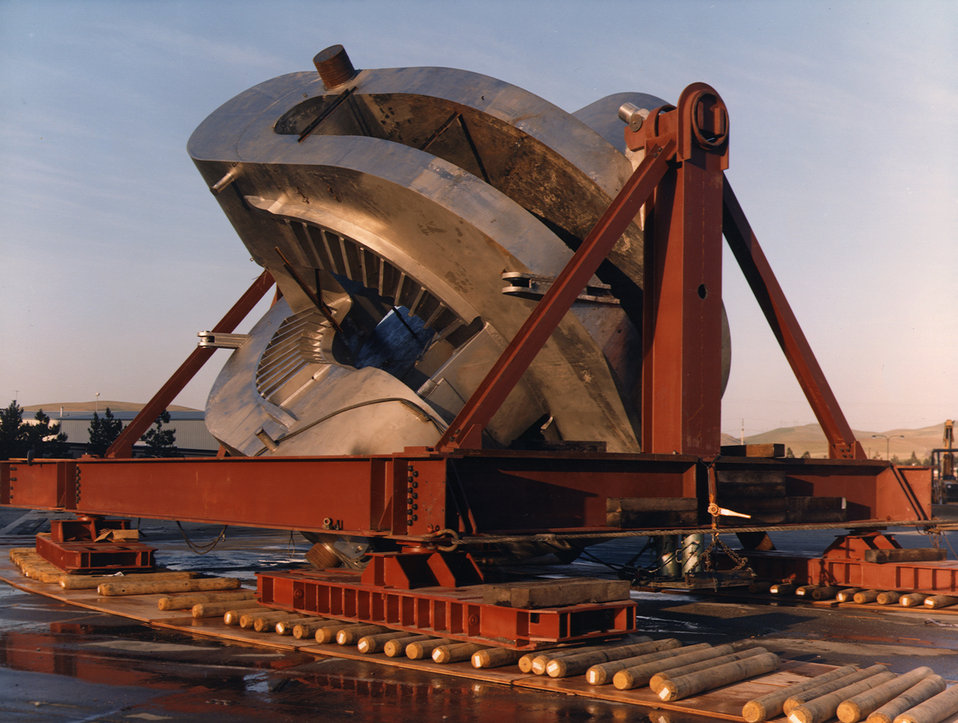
Photo of the Week: The Mirror Fusion Test Facility

This 1981 photo shows the Mirror Fusion Test Facility (MFTF), an experimental magnetic confinement fusion device built using a magnetic mirror at Lawrence Livermore National Laboratory (LLNL). The MFTF functioned as the primary research center for mirror fusion devices. The design consisted of a 64-meter-long vacuum vessel fitted with 26 coil magnets bonding the center of the vessel and two 400-ton yin-yang magnet mirrors at either end. The first magnet produced a magnetic field force equal to the weight of 30 jumbo jets hanging from the magnet coil.